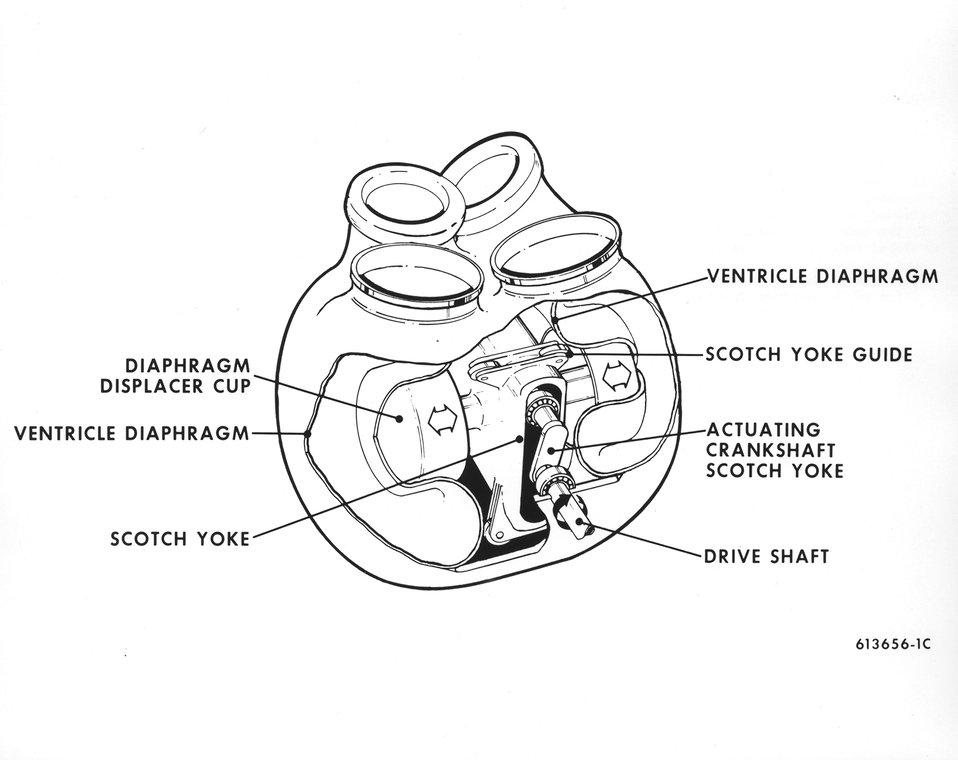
The blood pump for the artificial heart under assessment by the Atomic Energy Commission would have a volume of 2.2 pounds or 1.47 pints, with outside dimensions of 5.5 by 4.7 by 3.9 inches. Circa 1973.